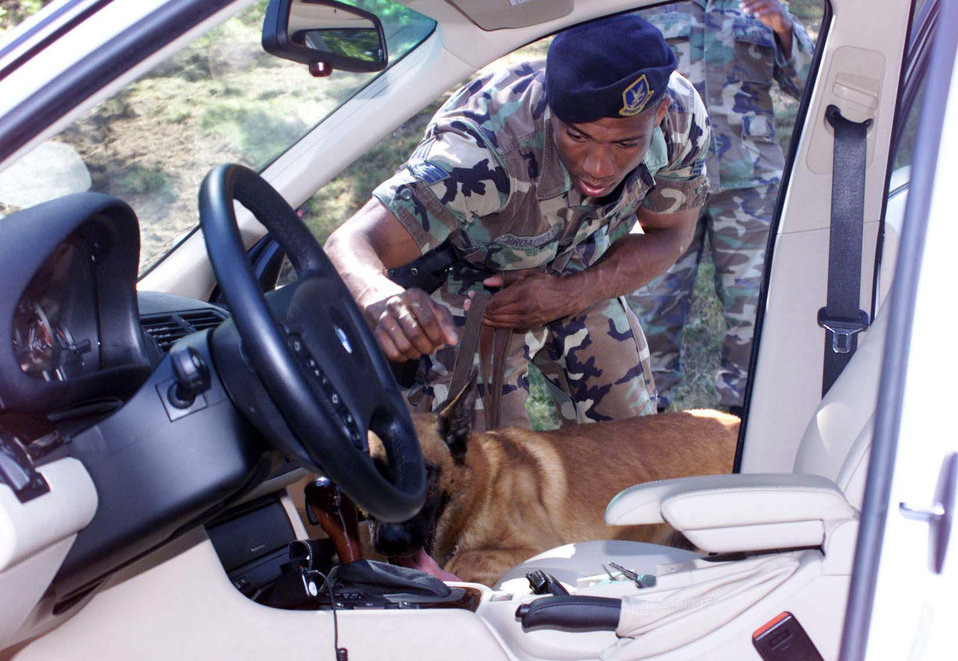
Search

ANDREWS AIR FORCE BASE, Md. -- Security is increased here, Sept. 11, 2001, after a terrorist attack on the Pentagon. Staff Sgt. Broadnax, of the 89th Security Police Squadron and his gaurd dog, search every vehicle entering Andrews.